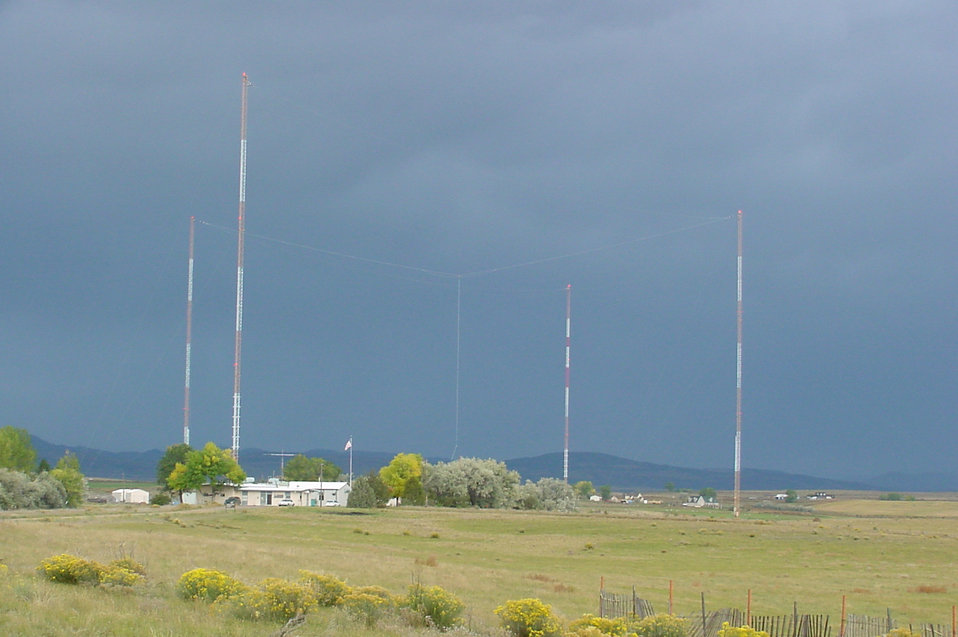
WWVB Towers

Modern photo of NIST radio station WWVB. The transmitters are in the building. In the background are WWVB's four north towers supporting the antenna in the center. The cables are most visible under dark, stormy skies like this.